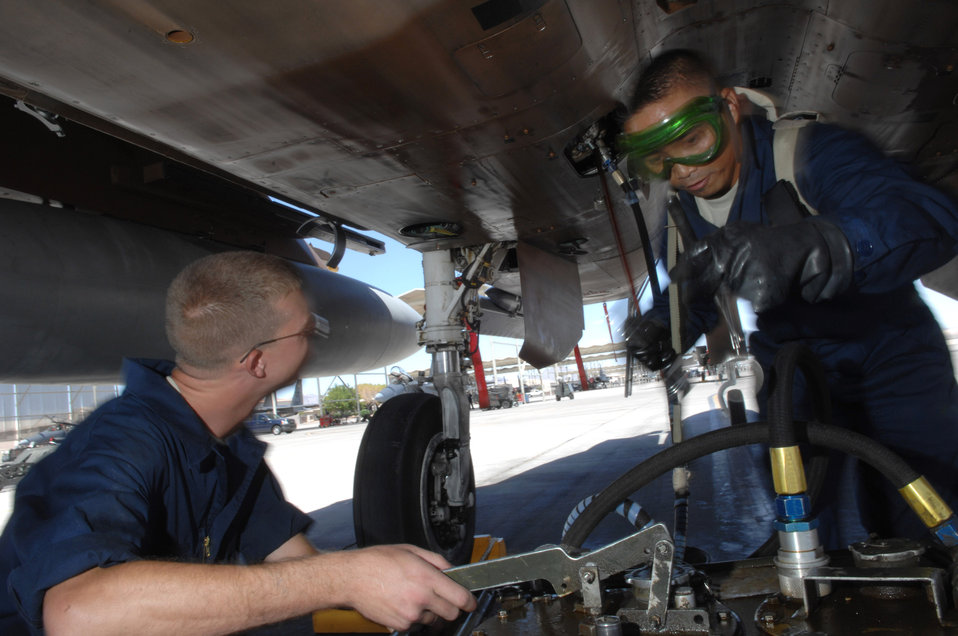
Teamwork

Airman 1st Class Jacob Alwell (left) and Staff Sgt. Raymond Oliveros service a generator on a F-15 Eagle July 24 at Nellis Air Force Base, Nev. The 926th Group is an Air Force Reserve unit under the 10th Air Force, Naval Air Station Joint Reserve Base, Fort Worth, Texas. The group is located at Nellis AFB as an associate unit to the Air Force Warfare Center. Through total force integration, reservists are integrated into active duty Air Force units, accomplishing the mission alongside active-duty Airmen on a daily basis. Airman Alwell is a 57th Aircraft Maintenance Squadron F-15 crew chief, and Sergeant Oliveros is an F-15 crew chief assigned to the 926th Group Det. 2.